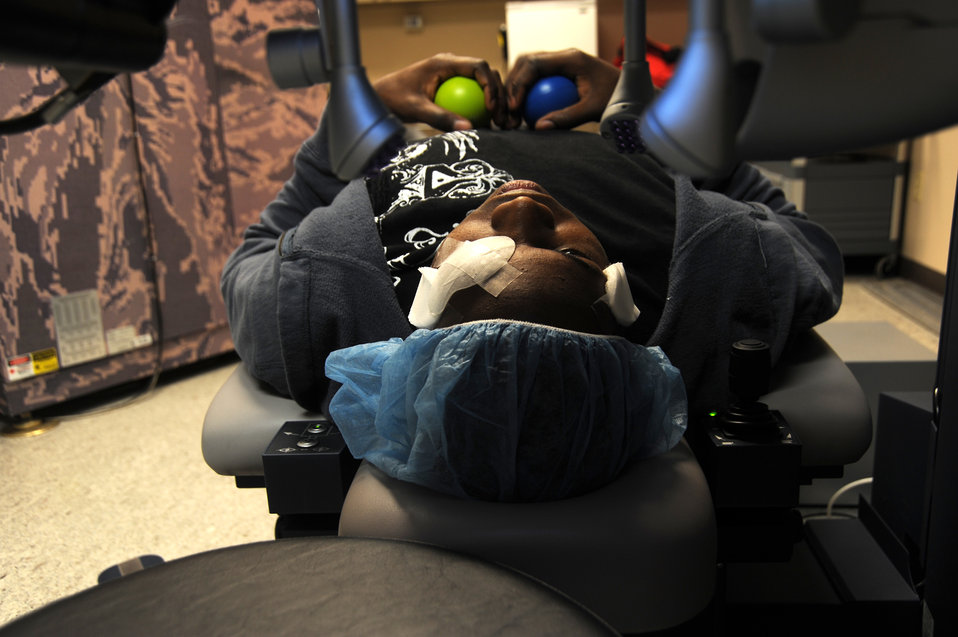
WHMC LASIK

Army Staff Sgt. Stanley Arnold awaits the second half of his LASIK refractive surgery March 3, 2011, at the Joint Refractive Surgery Center at Lackland Air Force Base, Texas. The laser will lay down a treatment to smooth the surface of his eye, which will improve his vision. Sergeant Arnold is an instructor and infantryman at Ft. Huachuca, Ariz.